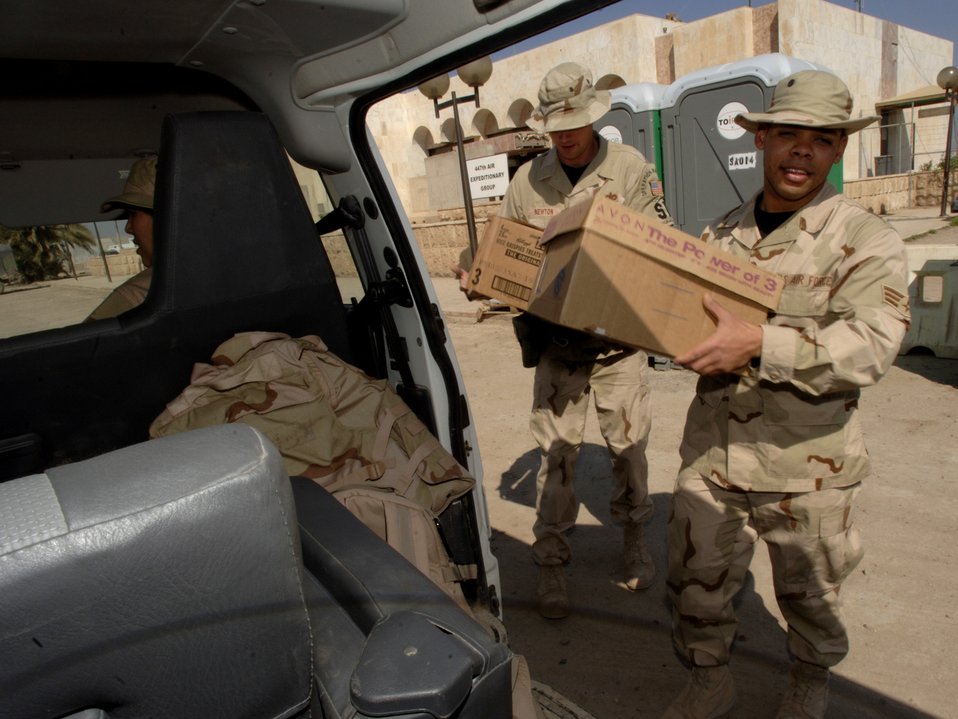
Medics, volunteers meet Iraqis' medical needs

Senior Airman Argenis Sambois carries a box full of toys, candy and school supplies for the children he will see at the Radhwaniya Medical Clinic Outreach Program. Airman Sambois is assigned to the 447th Expeditionary Civil Engineer Squadron at Sather Air Base, Iraq. Several times a week, volunteers meet at the facility on the edge of the Baghdad International Airport, and support the medical needs of civilians.